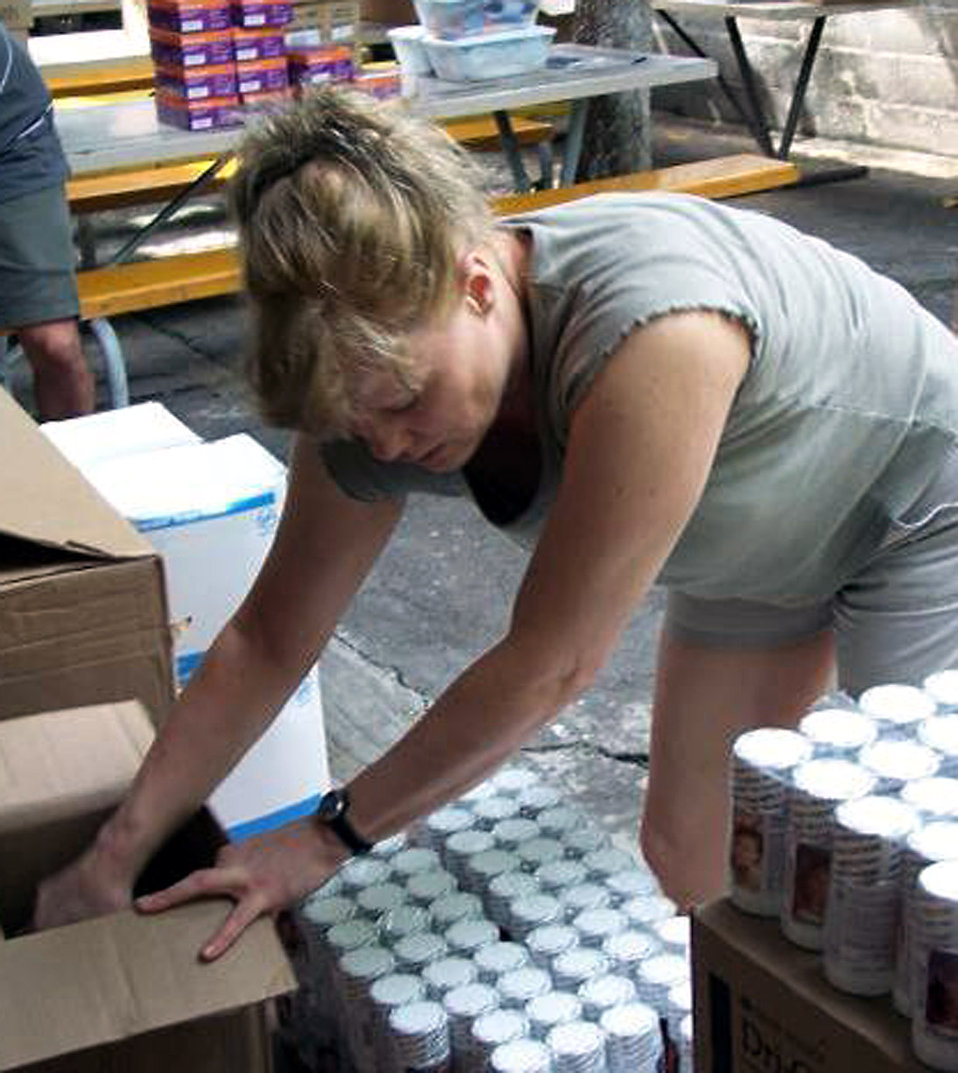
21st MDG Airmen return from humanitarian, training deployment

Lt. Col. Maureen Charles counts prenatal vitamins during a medical readiness exercise, or 'MEDRETE' June 20 in San Miguel, El Salvador. Airmen from the 21st Medical Group are supporting the Central American exercise as part of an ongoing U.S. Southern Command initiative. Colonel Charles is a 21st Medical Group women's health nurse practitioner.